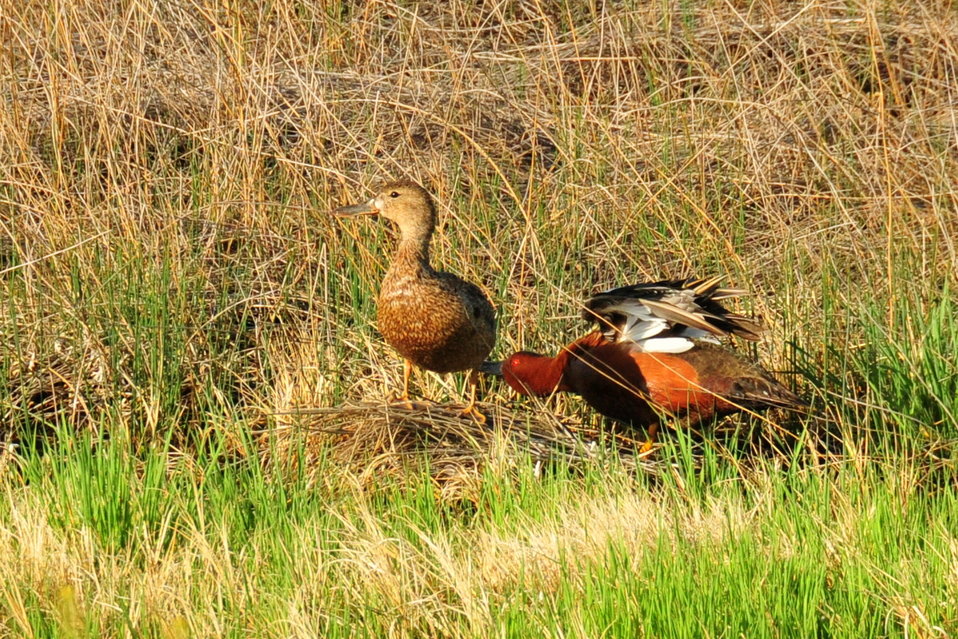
Cinnamon teal pair on Seedskadee NWR 02

A cinnamon teal pair courting on Seedskadee NWR. Head bobbing, bowing, and flight chases were all part of the courtship for this pair. A slightly spatulate tip of the bill for both drake and hen identifies them as a cinnamon teal as opposed to a hen blue winged teal which looks almost identical in plumage but has a straighter tip of the bill.